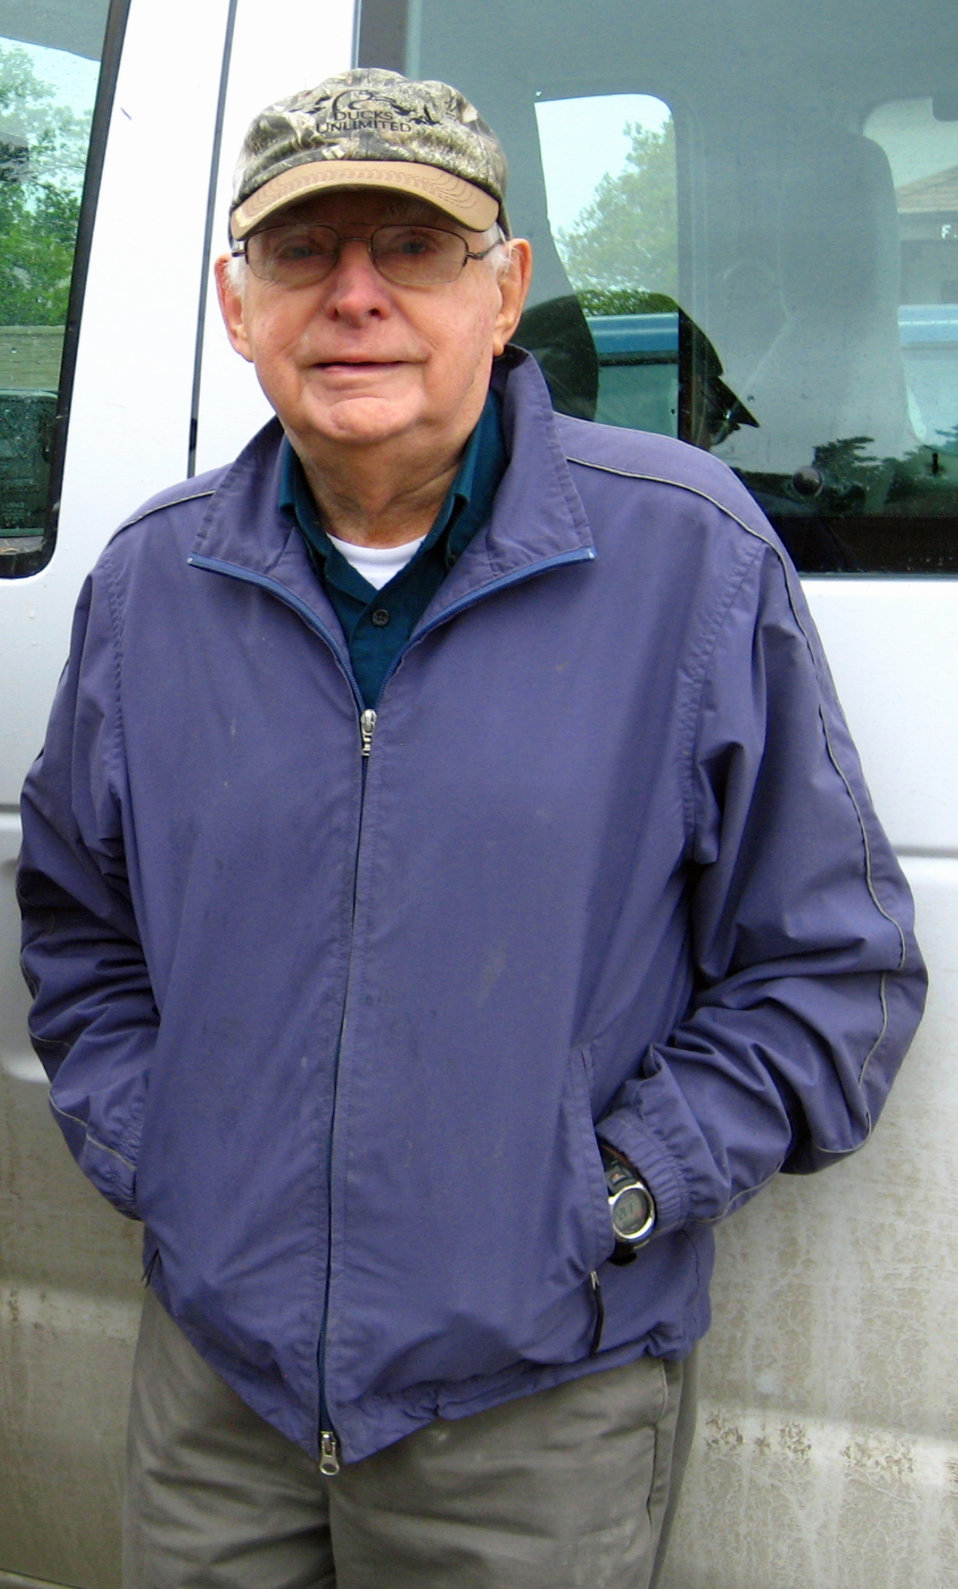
Karl Haller

Credit: Kathy Whaley, USFWS
April 2013